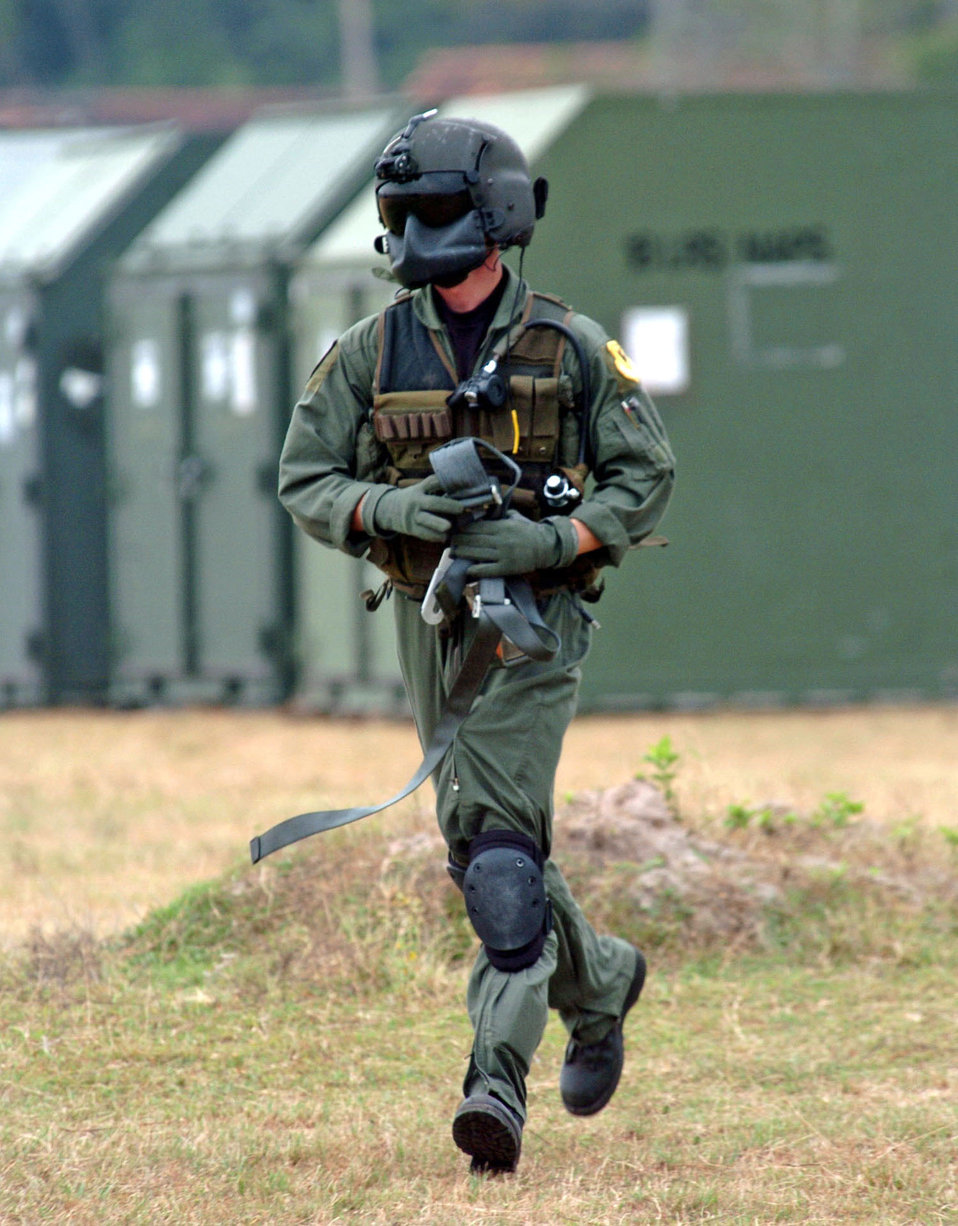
Support in Sri Lanka

KATUNAYAKE AIR FORCE BASE, Sri Lanka -- Senior Airman Jeff Layton races toward an HH-60G Pave Hawk helicopter during relief operations here Jan. 11. Airman Layton is an aerial gunner deployed from the 33rd Rescue Squadron at Kadena Air Base, Japan.